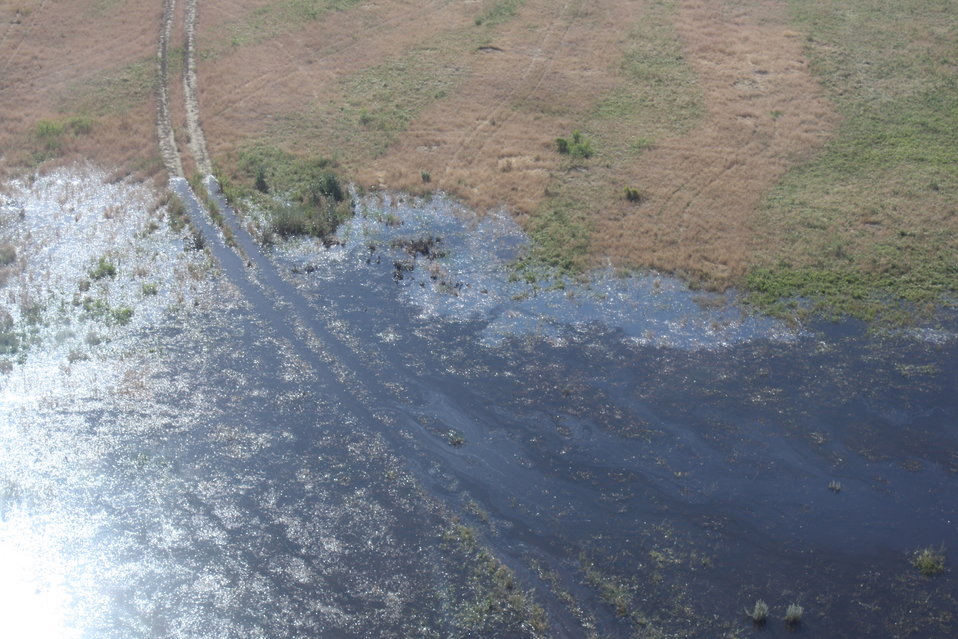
Aerial Wildlife Survey

The U.S. Fish and Wildlife Service conducts daily aerial wildlife surveys to identify, monitor and assess potentially oiled wildlife and their habitats.